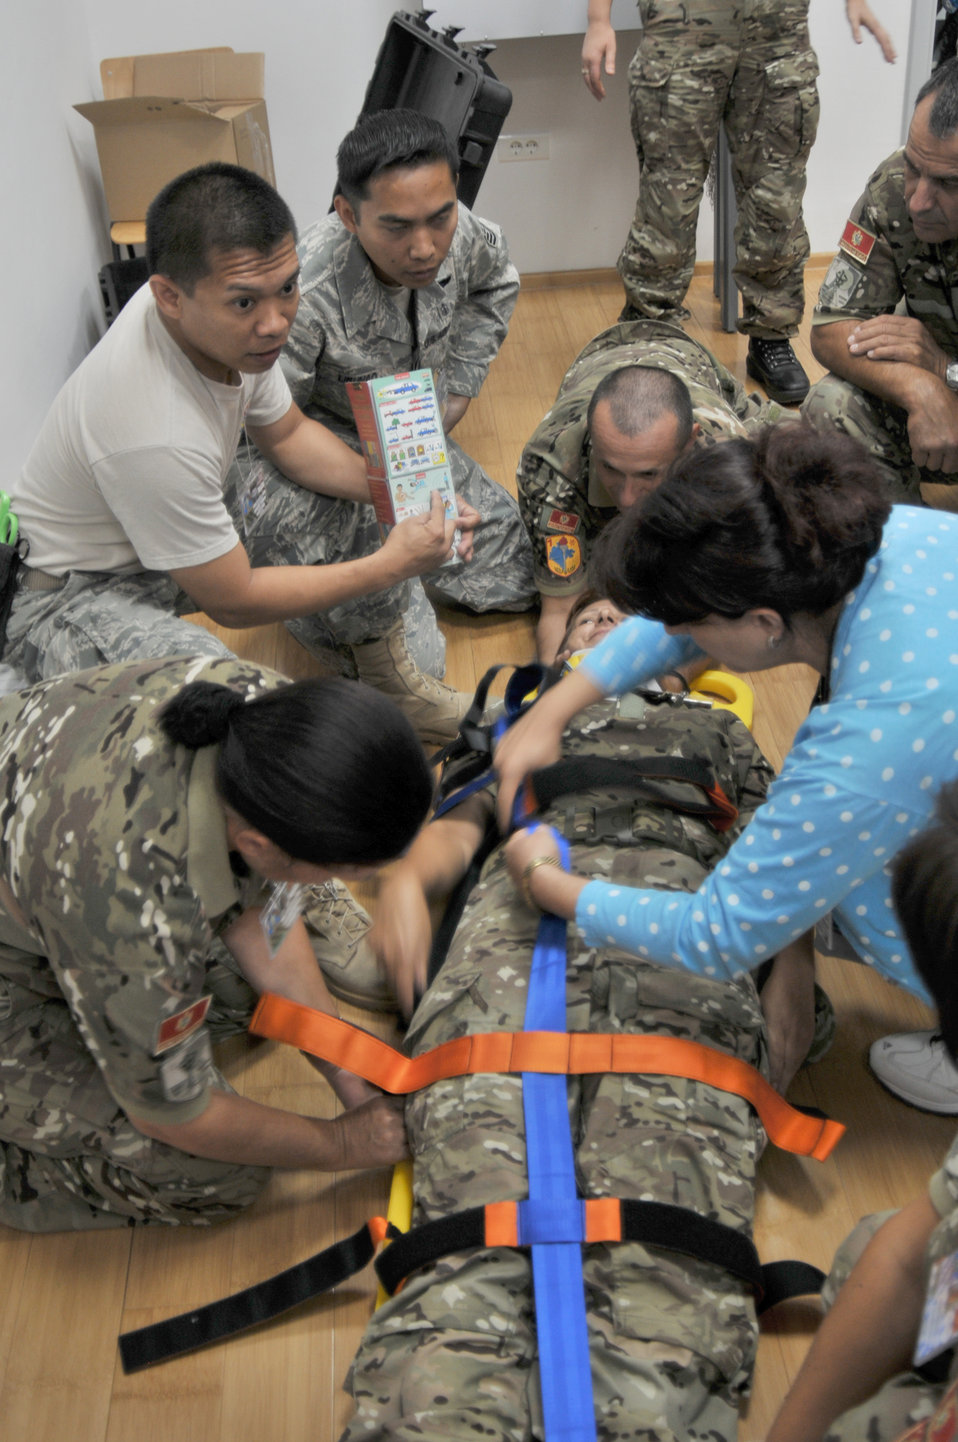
MEDCURE '10

Staff Sgt. Vince Remo (in t-shirt) and Tech. Sgt. Jose Libunao work with members of the Montenegrin army Sept. 14, 2010 through the procedures of securing a patient to a stretcher during a class at Medical Training Exercise in Central & Eastern Europe 2010 held at Danilovgrad Army Base, Montenegro. Sergeant Remo is using a medical translation pamphlet that features symbols instead of words to quickly overcome the language barrier. MEDCEUR10 is a medical training exercise including servicemembers from 10 nations.